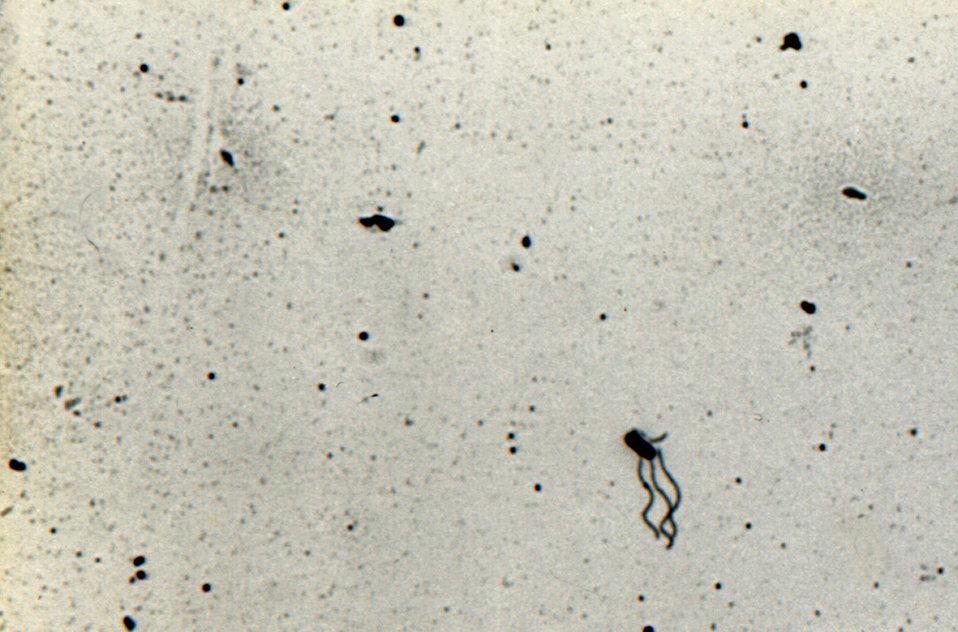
This is a photomicrograph of Clostridium tertium bacteria using a Leifson flagella stain; Magnified 320X.